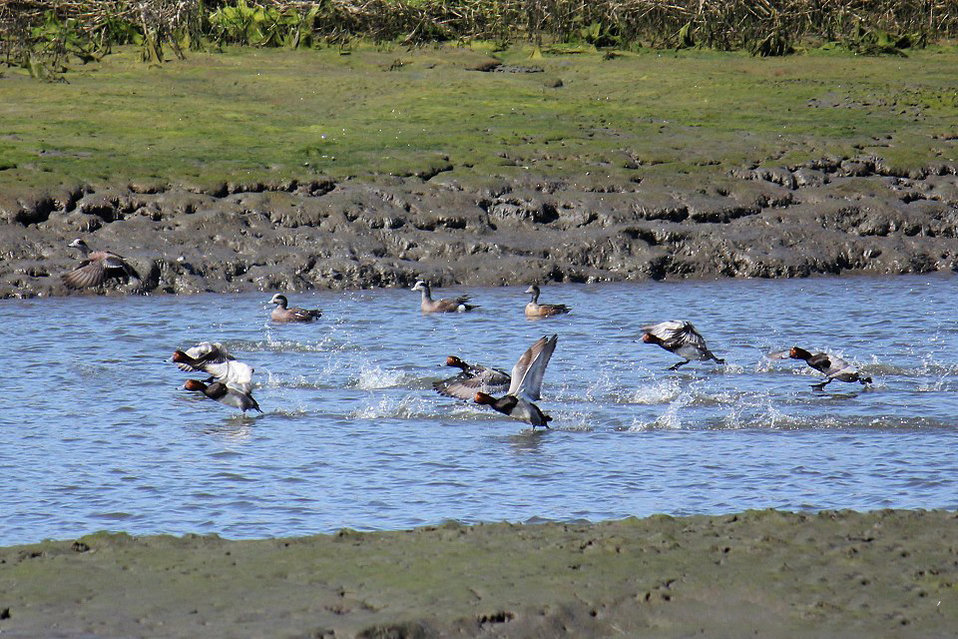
Redheads in Otay River

These redhead ducks are taking advantage of the abundant feeding opportunities presented after the completion of the Restoration Project.